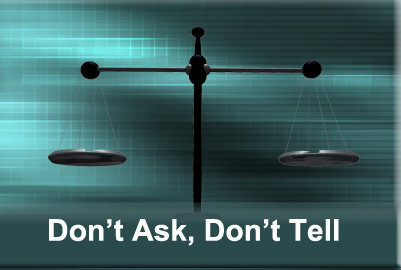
Don't Ask, Don't Tell